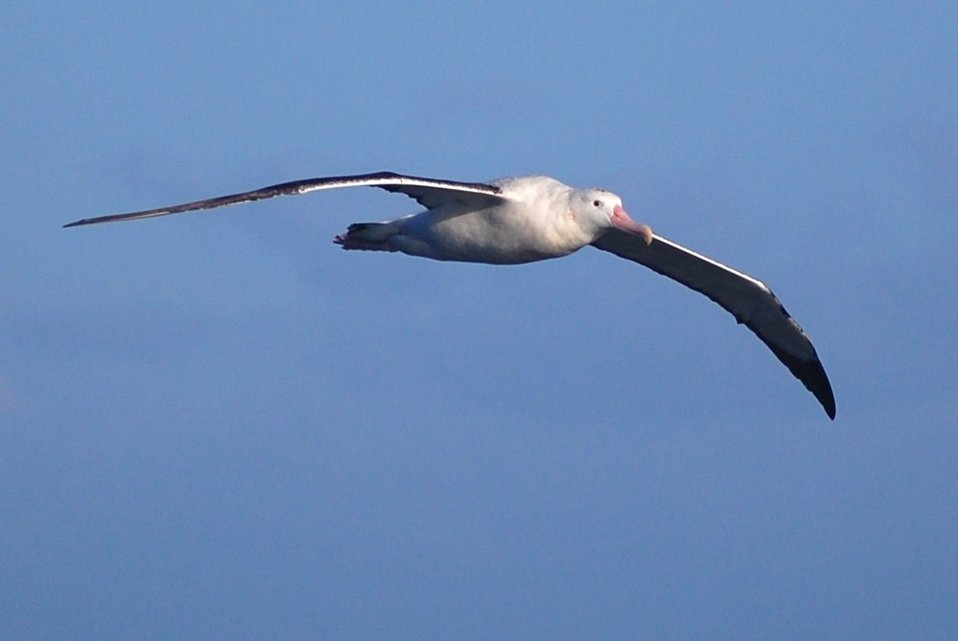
Wandering albatross.